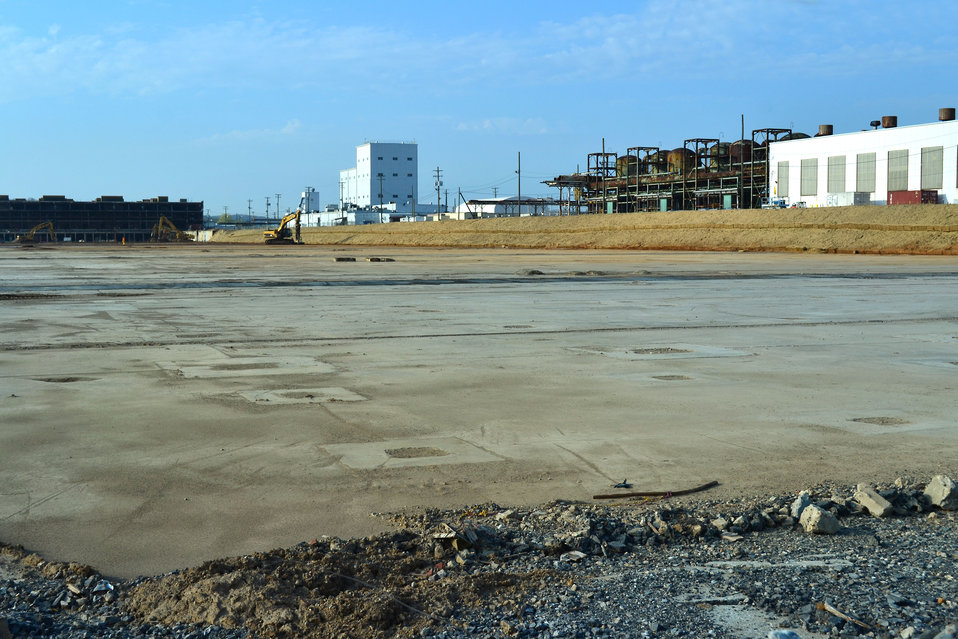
DandD work K-25 Oak Ridge

13-034 DOE photo Lynn Freeny 4-9-2013